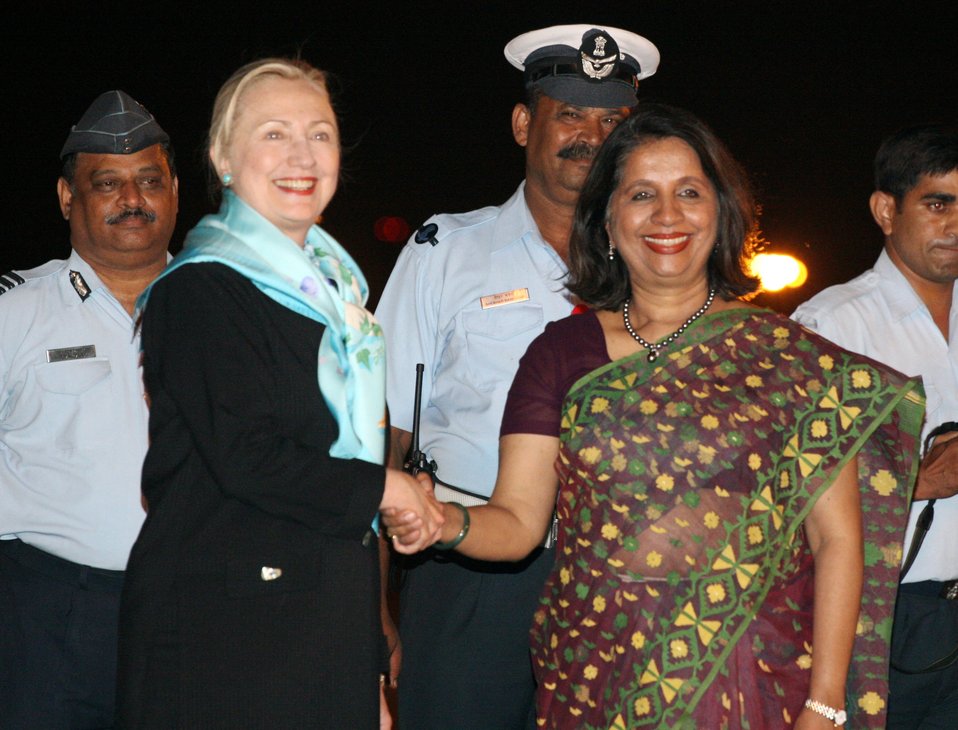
Secretary Clinton Is Greeted By Indian Foreign Secretary Nirupama Rao

U.S. Secretary of State Hillary Rodham Clinton is greeted by Indian Foreign Secretary Nirupama Menon Rao upon her arrival to New Delhi, India, on July 18, 2011. Secretary Clinton will lead the U.S. delegation at the second round of the U.S.-India Strategic Dialogue.